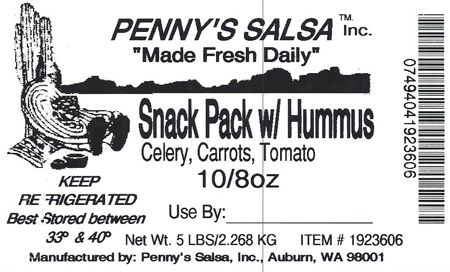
RECALLED – Hummus

July 16, 2013 – Product Recall – Hagee Foods Inc. dba Penny's Salsa Inc. Recalls Hummus Products Because of Possible Health Risk.